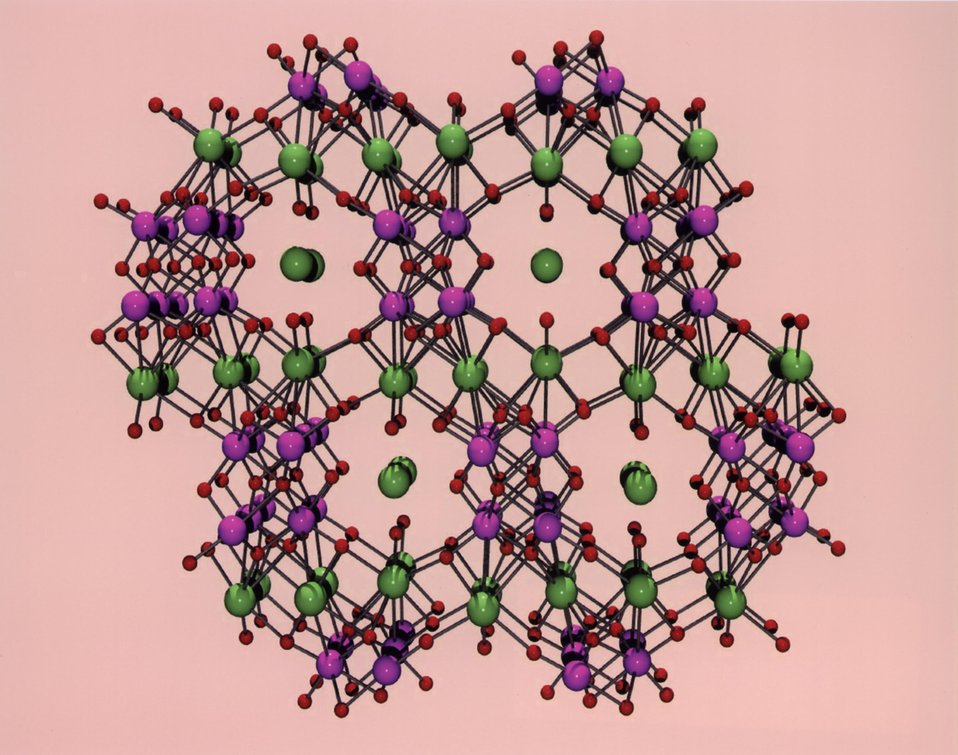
FRAMEWORK OF THE SANDIA OCTAHEDRAL MOLECULAR SIEVES (SOMS).

SANDIA RESEARCHERS HAVE CREATED A NEW CLASS OF MOLECULAR CAGES THAT CAN CAPTURE RADIOACTIVE CHEMICALS SWIMMING IN A SEA OF HAZARDOUS WASTE. THEY CAN LET CERTAIN SPECIES IN WHILE KEEPING OTHERS OUT. THESE MICRO-POROUS MATERIALS, SANDIA OCTAHEDRAL MOLECULAR SIEVES, (SOMS) CAN BE USEFUL IN MICROELECTRONICS FABRICATION, WASTE CLEAN-UP AND INDUSTRIAL PROCESSING.